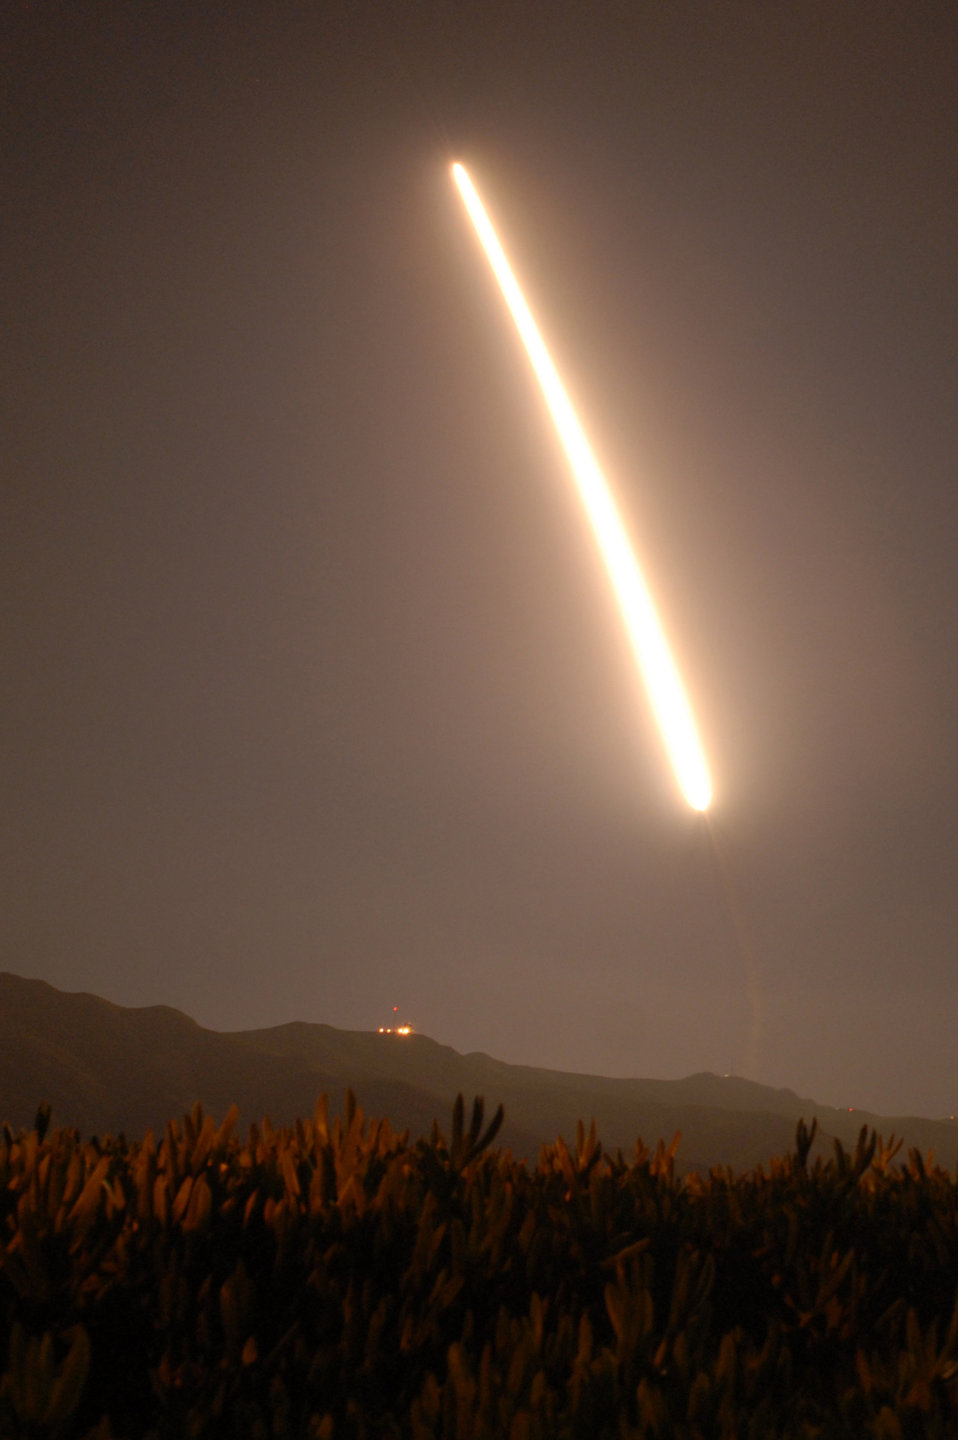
Rocket launch

A Minotaur I rocket was launched Feb. 6, 2011, from Vandenberg Air Force Base, Calif. The rocket carried a national security payload for the National Reconnaissance Office.